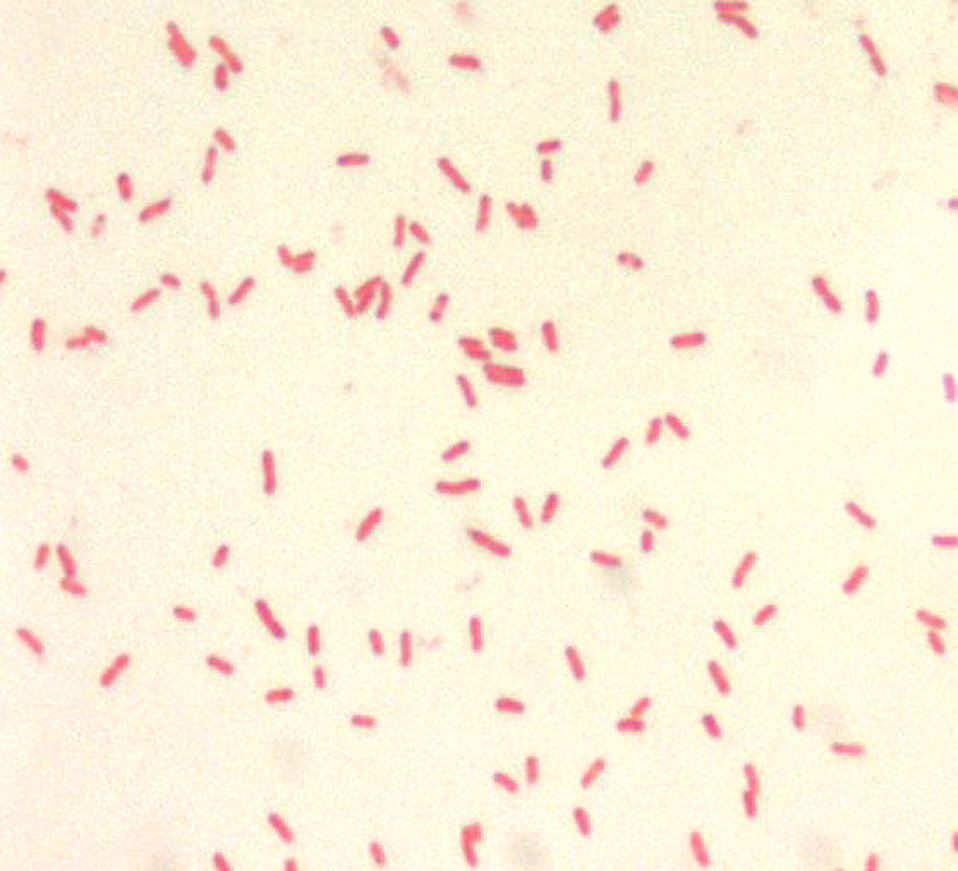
Yersinia pestis, Gram-negative bacillus, 1000x Magnification.